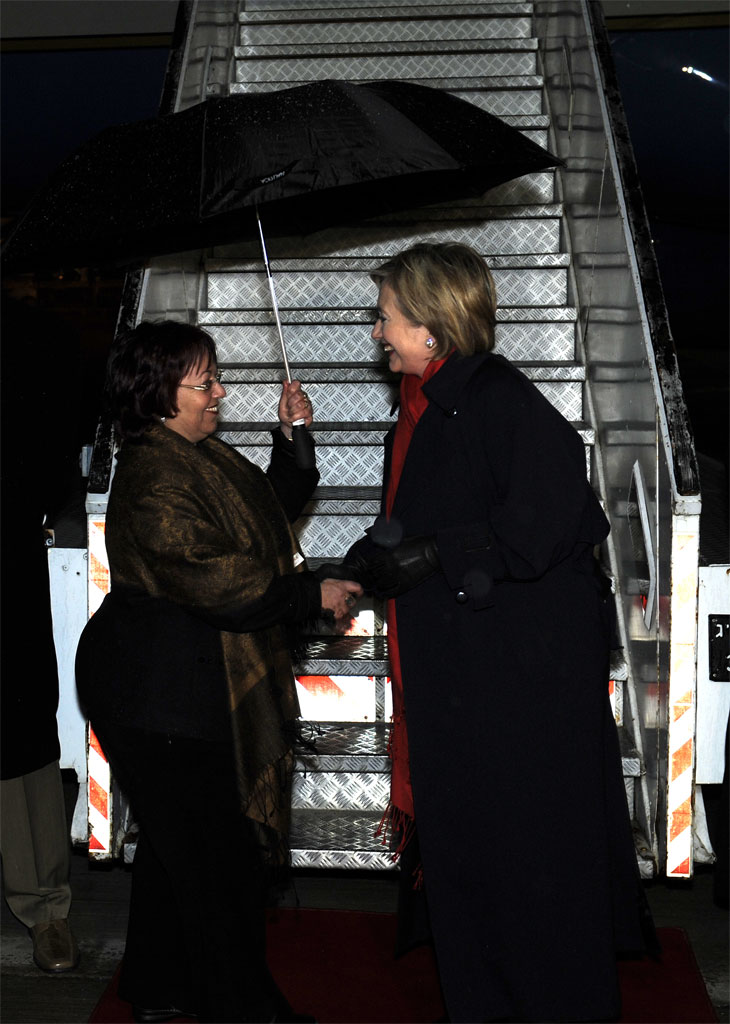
Secretary Clinton Arrives in Jerusalem

U.S. Secretary of State Hillary Rodham Clintonis being met by Nitza Raz-Silbiger, Director, Protocol Department of the Ministry of Foreign Affairs at Ben Gurion Airport, Israel March 2, 2009.